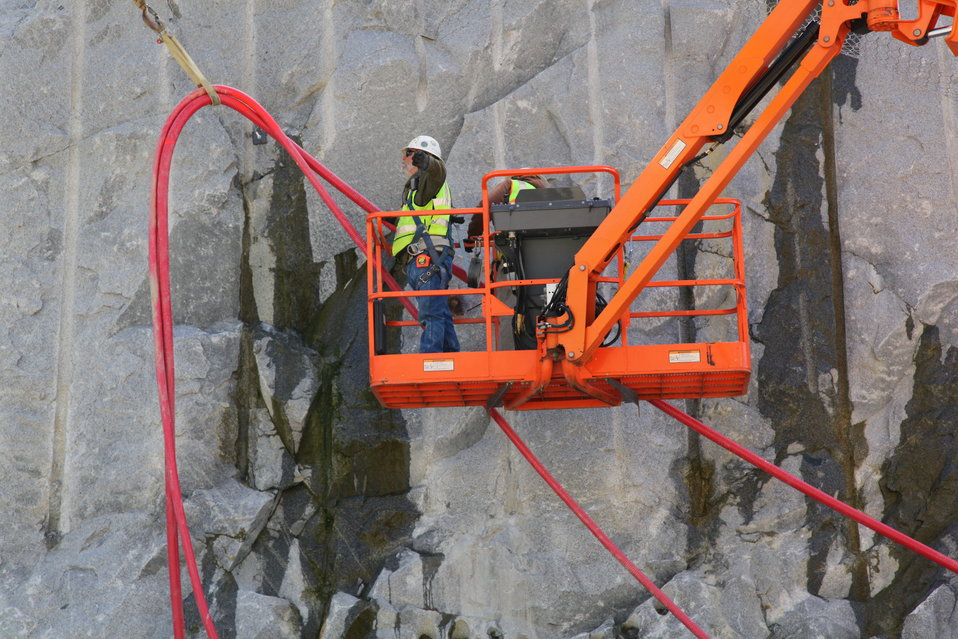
Installing electrical lines at the Folsom Dam auxiliary spillway

Contractors for the U.S. Army Corps of Engineers Sacramento District install electrical lines down the west wall at the excavation site for the Folsom Dam auxiliary spillway in Folsom, Calif., April 5, 2012. The electrical lines will power the concrete batch plant, with concrete paving of the spillway chute scheduled to begin in May. The spillway, scheduled to be ready for use in 2017, will allow Folsom Dam to release water sooner and more safely. The project is part of the Folsom Dam Joint Federal Project, a joint effort of the Sacramento District, the U.S. Bureau of Reclamation, the Central Valley Flood Protection Board and the Sacramento Area Flood Control Agency to improve the safety of the dam and reduce flood risk for the greater Sacramento area.